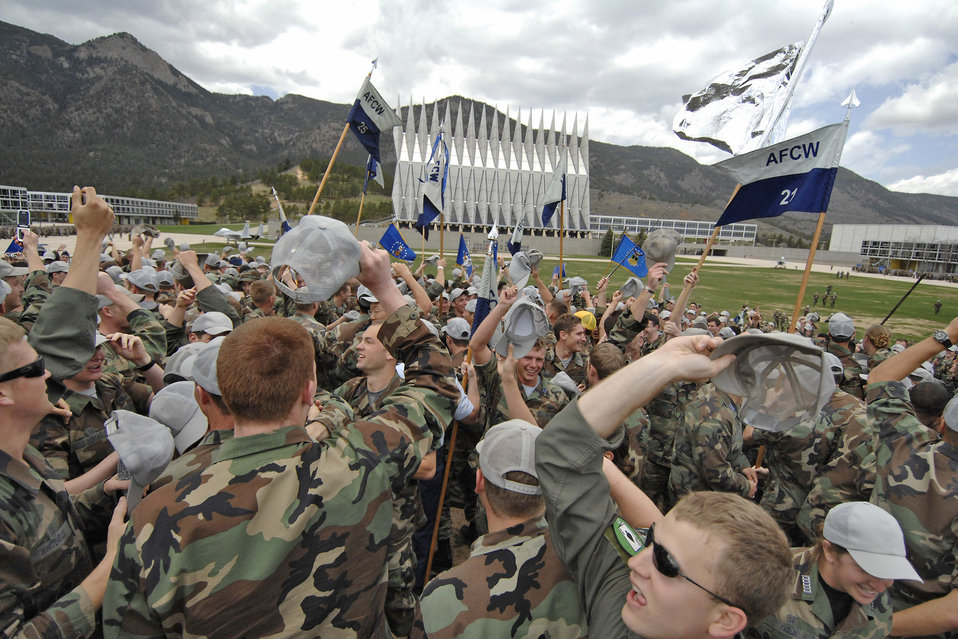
Time for celebration

Air Force Academy seniors celebrate the last day of classes before final exams on Spirit Hill at the U.S. Air Force Academy in Colorado. The Class of 2009 graduates May 27.